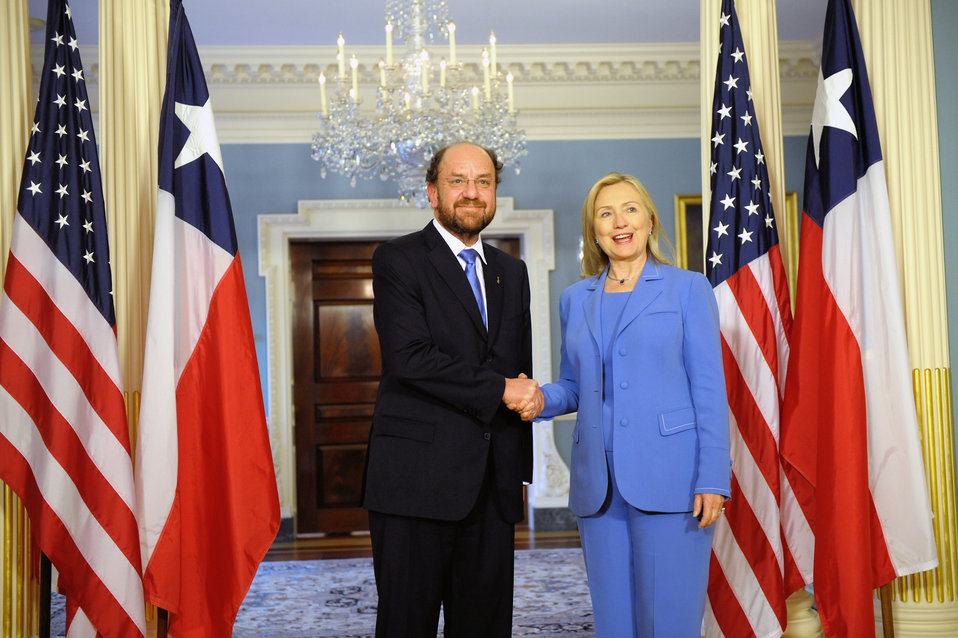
Secretary Clinton Meets With Chilean Foreign Minister Moreno

U.S. Secretary of State Hillary Rodham Clinton meets with Chilean Foreign Affairs Minister Alfredo Moreno, at the U.S. Department of State in Washington, D.C., on August 3, 2011.